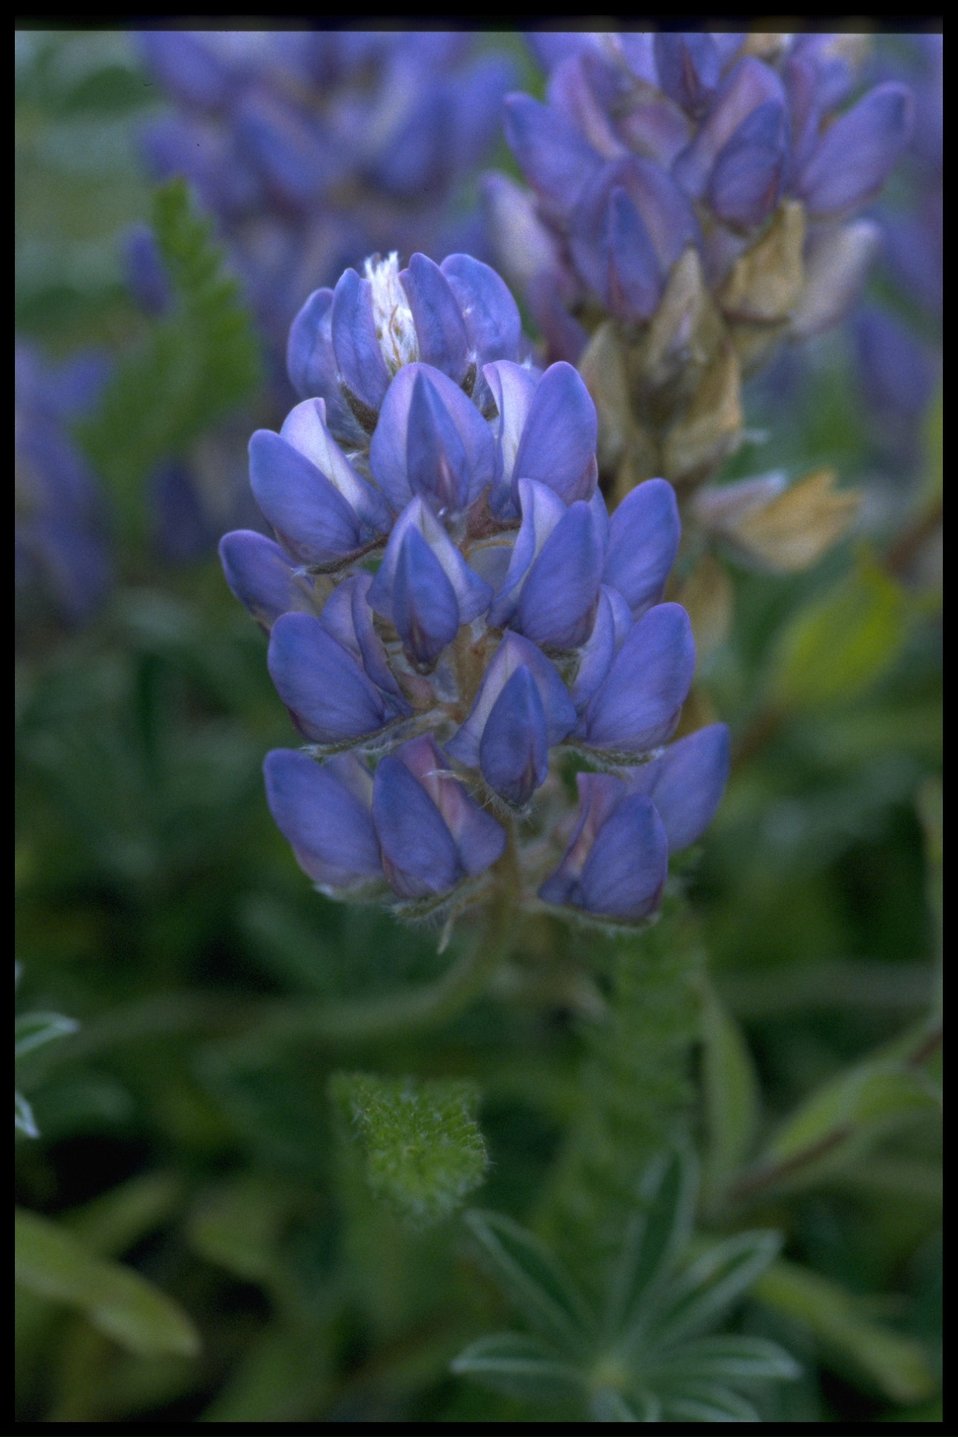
Closeup shot of lupine (genus Lupinus).